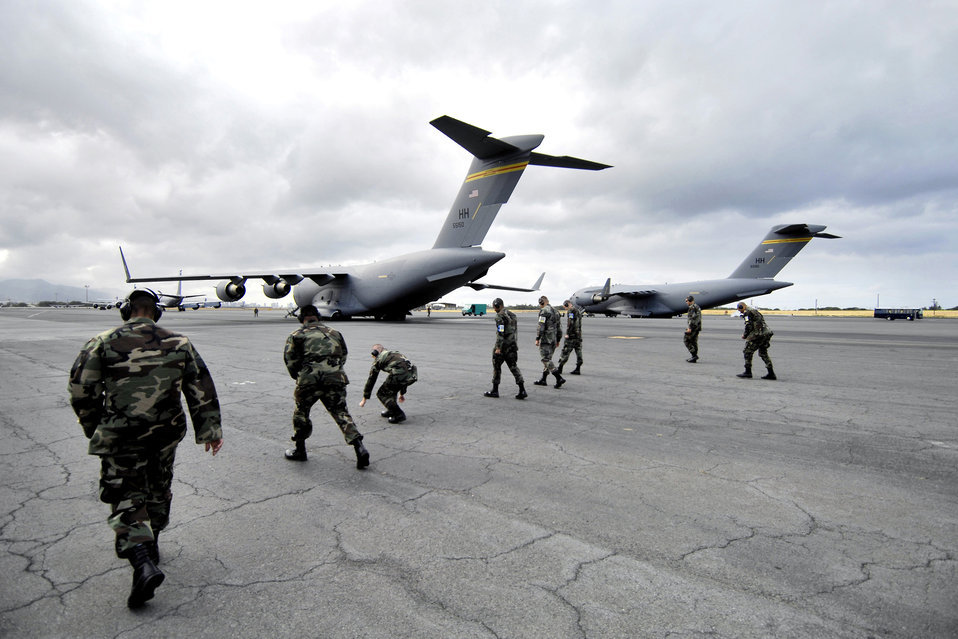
Hickam C-17 crews prep for Rodeo

Crew chiefs conduct a foreign object debris, or FOD, walk June 28 before launching a C-17 Globemaster III from Hickam Air Force Base, Hawaii. The Airmen, from the 15th Aircraft Maintenance Squadron, are practicing for the upcoming Air Mobility Command Rodeo at McChord AFB, Wash.